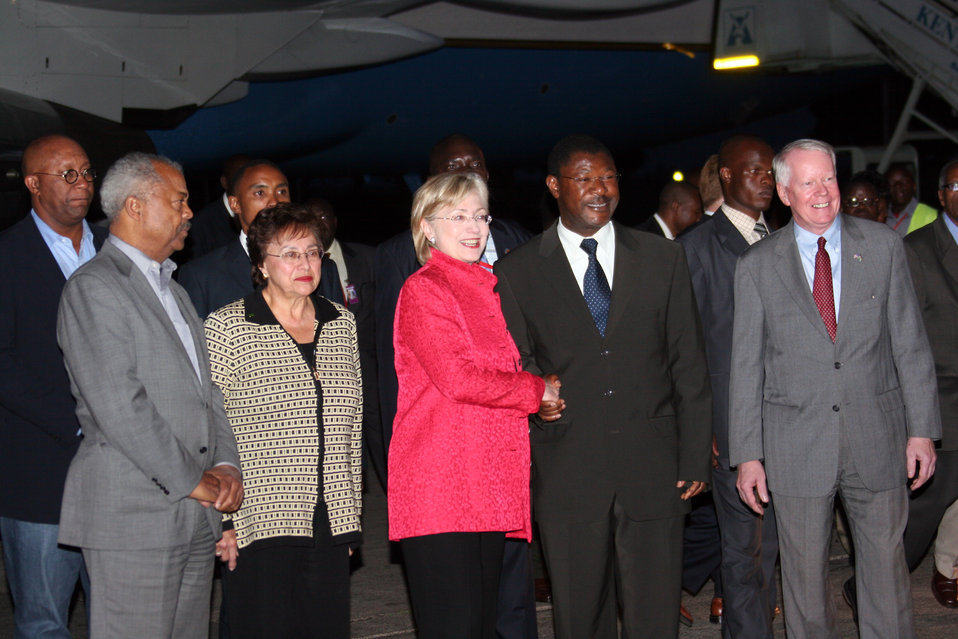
Secretary Clinton Arrives in Nairobi, Kenya

U.S. Secretary of State Hillary Rodham Clinton (center) with (left to right) U.S. Congressman from the 10th Congressional District of New Jersey Donald M. Payne, U.S. Representative for New York's 18th District Nita M. Lowey, Kenyan Foreign Minister Moses Wetangula, and U.S. Ambassador to Kenya Michael E. Ranneberger at Jomo Kenyatta International Airport in Nairobi, Kenya August 4, 2009.